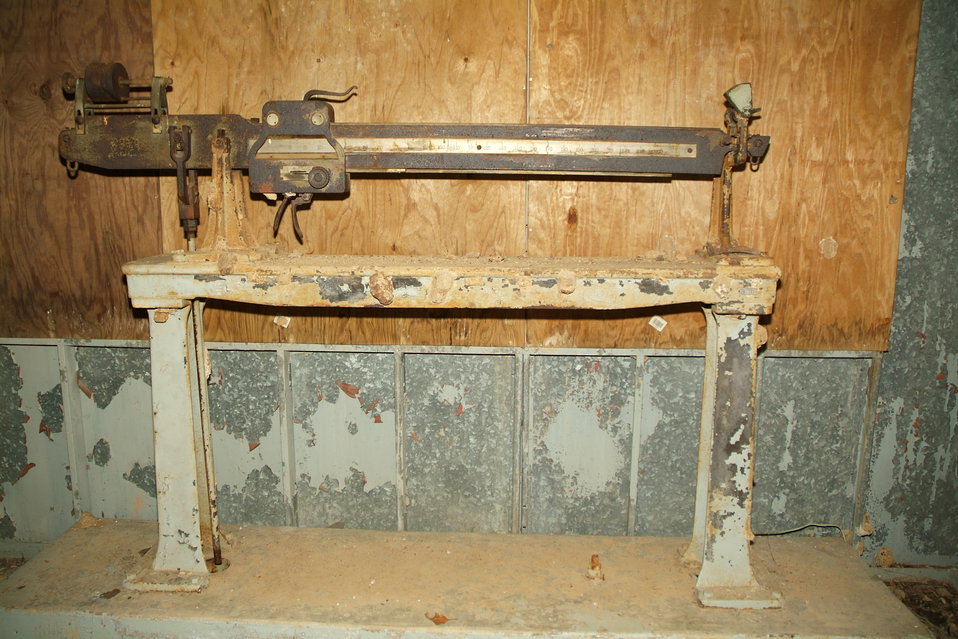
Old Railroad Scale House Removed at DOE’s Paducah Site

The railroad scale house, in West Kentucky Wildlife Management Area east of the Paducah site, was used in the 1950s to weigh Paducah Gaseous Diffusion Plant freight. Workers preserved the old scale because of its potential historical significance. The scale house was demolished.